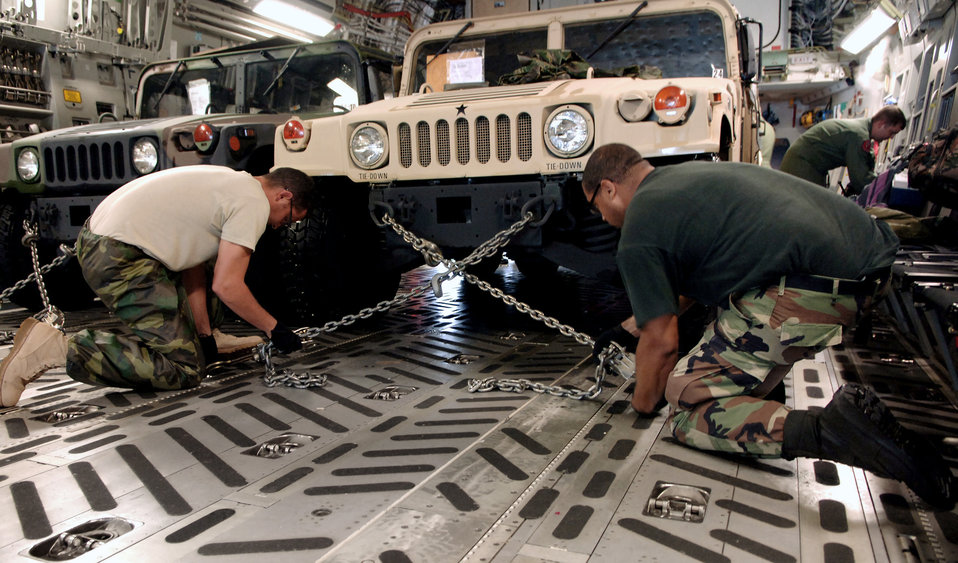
Hurricane Gustav

Members of MacDill Air Force Base, Fla. ground crew secure Humvees on a C-17 Globemaster. The vehicles and medical supplies were sent to Beaumont, Texas, in support of evacuations prior to Hurricane Gustav's arrival.